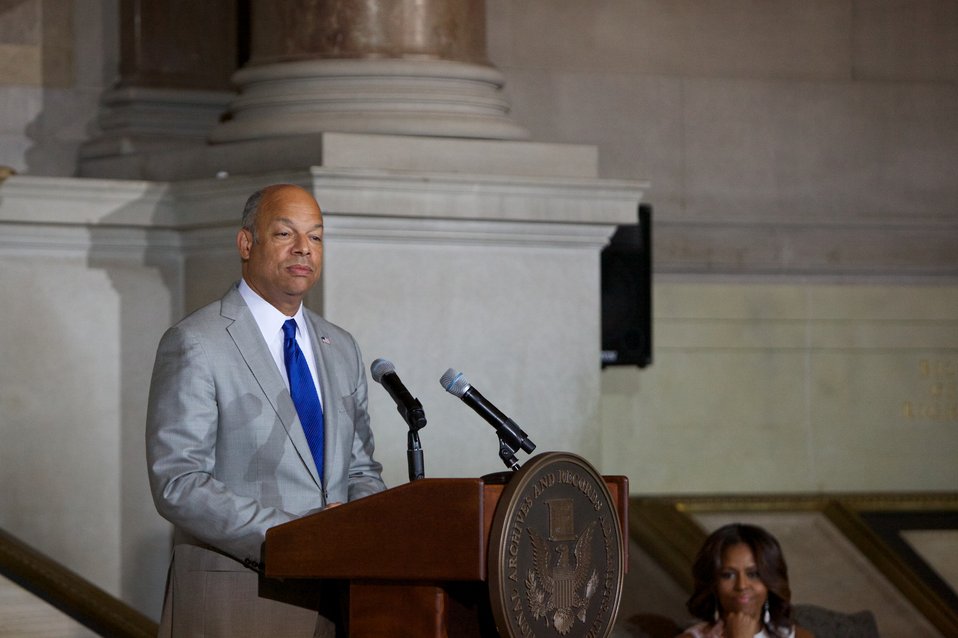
Naturalization Ceremony with Michelle Obama